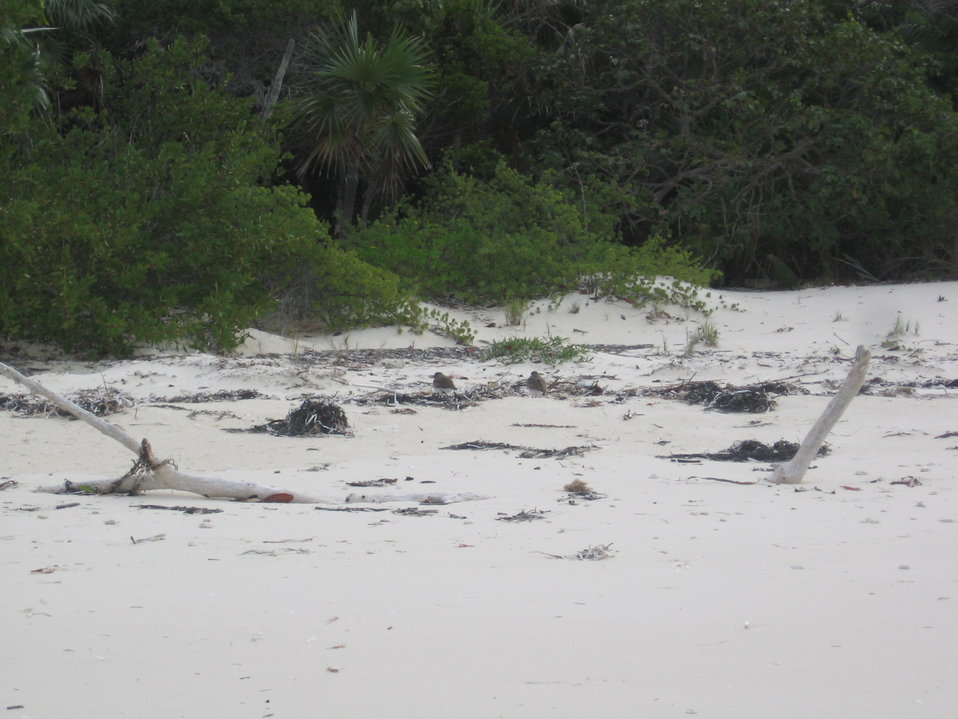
Two Wilson’s Plovers roosting in wrack line